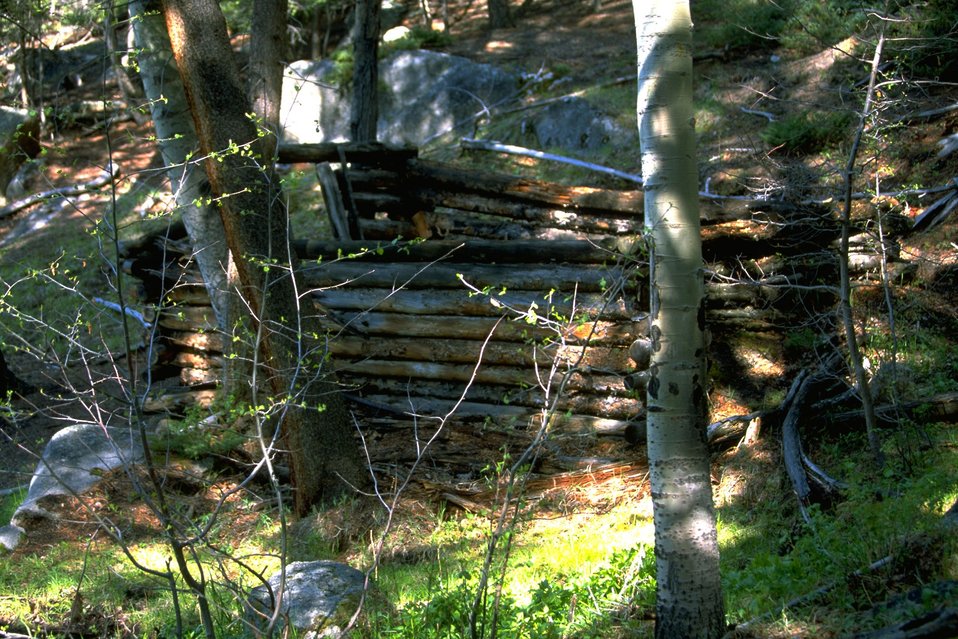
Remains of a log cabin